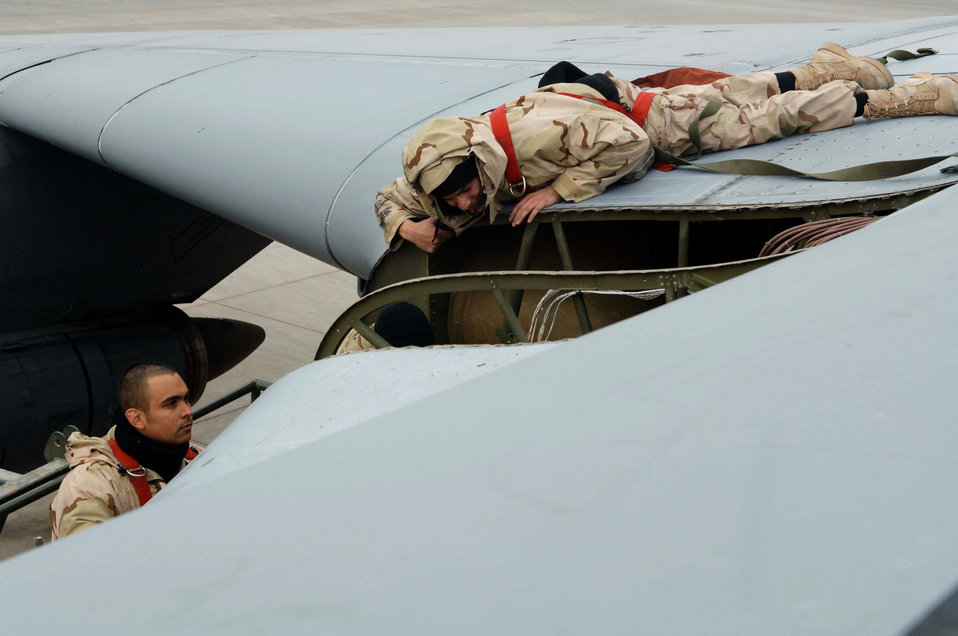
A 'galaxy' far, far away

Staff Sgt. Roger Vasquez and Airman 1st Class Chris Olmstead look inside a C-5 Galaxy in search of a mechanical malfunction. The C-5 is the largest airlifter in the Air Force and has the ability to carry 36 standard pallets and up to 81 troops simultaneously. Both Airmen are crew chiefs from the 721st Air Mobility Operations Group and are deployed from Travis Air Force Base, Calif.